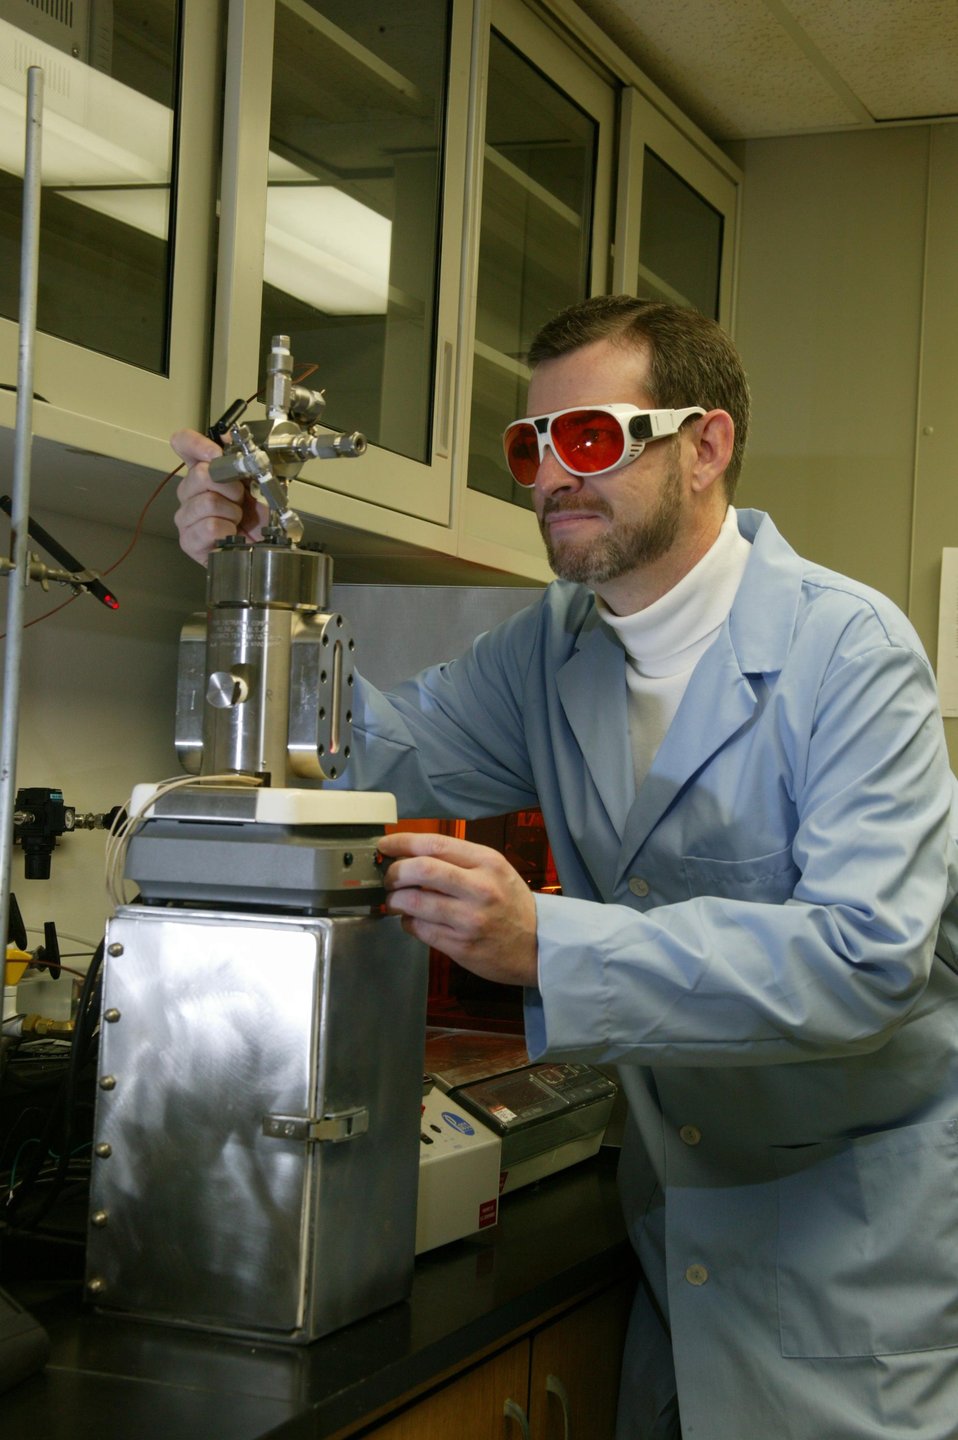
PACIFIC NORTHWEST NATIONAL LABORATORY RESEARCHERS ARE CONDUCTING GROUNDBREAKING RESEARCH TO REDUCE ATMOSPHERIC CARBON DIOXIDE EMISSIONS TO LEVELS THAT WILL PREVENT GLOBAL WARMING.

SCIENTISTS ARE TESTING A UNIQUE METHOD AIMED AT HARVESTING METHANE GAS FROM FROZEN HYDRATES. THE CONCEPT INVOLVES USING CARBON DIOXIDE TO 'UNFREEZE' THE METHANE HYDRATE TO RELEASE METHANE GAS. IF SUCCESSFUL, CARBON DIOXIDE--A GREENHOUSE GAS---WOULD REMAIN DEEP UNDERGROUND AS SOLID CO2-HYDRATE WHILE SIMULTANEOUSLY PRODUCING METHANE GAS FOR THE NATURAL GAS MARKET.